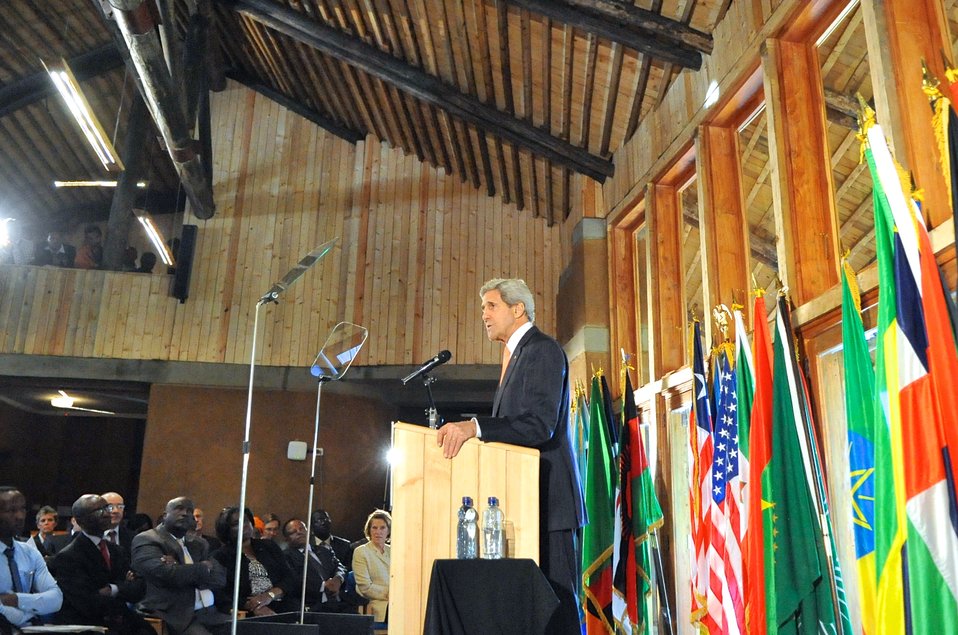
Secretary Kerry Delivers Speech About Africa Policy in Ethiopia

U.S. Secretary of State John Kerry stands under a wooden roof while delivering a speech about Africa policy in a botanical garden outside Addis Ababa, Ethiopia, on May 3, 2014.